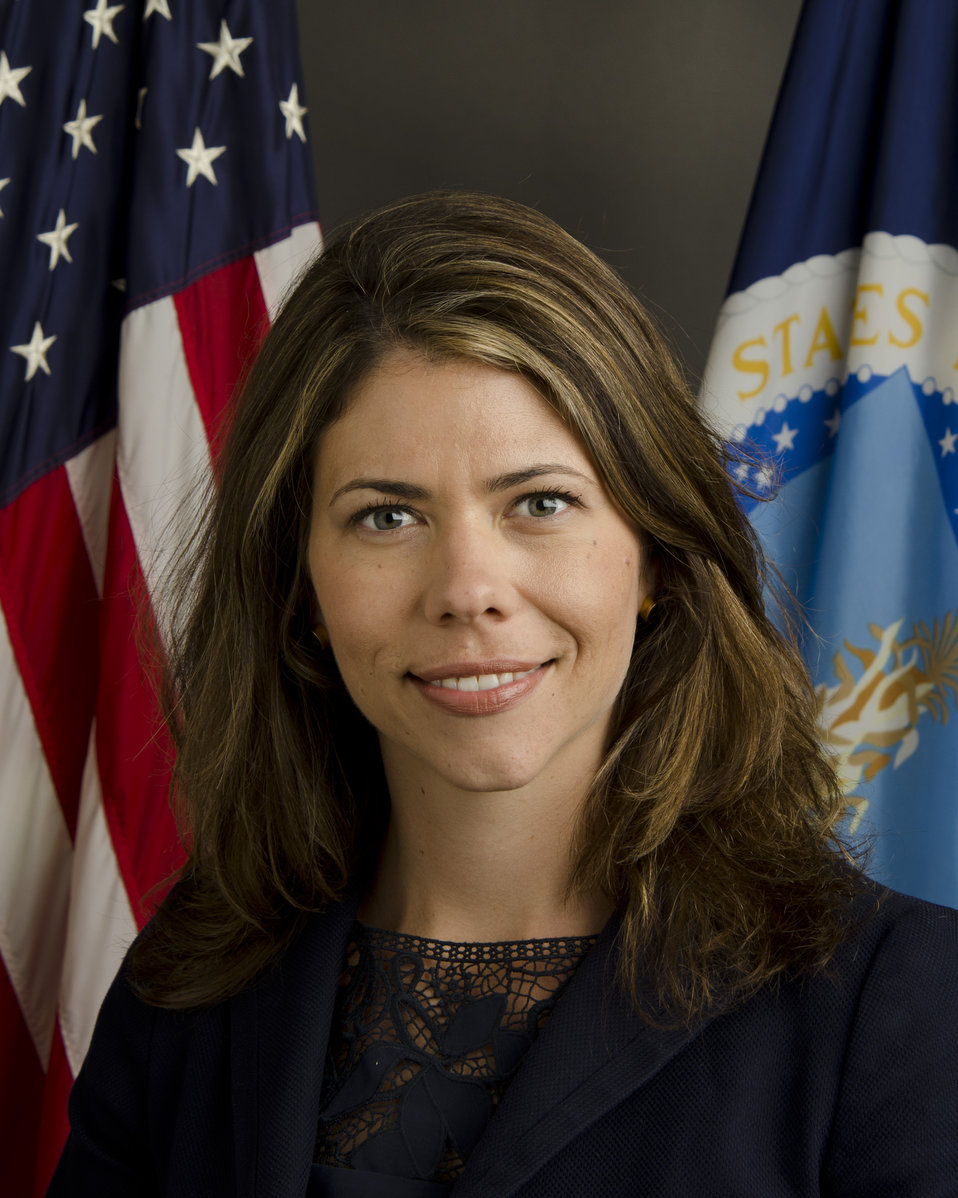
20130626-OSEC-KJH-0814 Deputy Chief of Staff to the Secretary of Agriculture Anne MacMillian

Anne Mac Millian is the U.S. Department of Agriculture (USDA) Deputy Chief of Staff to Agriculture Secretary Tom Vilsack.